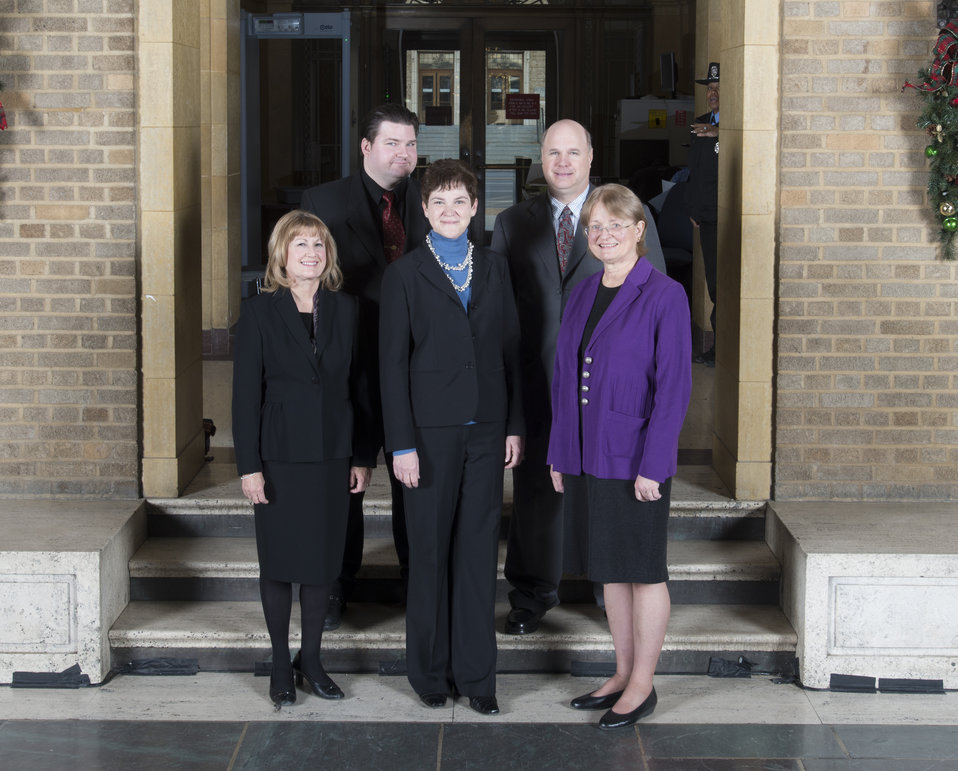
Agriculture Deputy Secretary Krysta Harden stands with the Food Safety Audit Team Office of Inspector General from Oakland, CA on the patio at the U.S. Department of Agriculture (USDA) in Washington, D.C. on Wednesday, Dec. 11, 2013. The team received the Secretary’s Honor Award for outstanding audit work in identifying weaknesses in the Food Safety and Inspection Services’ inspection process, resulting in significant improvement to the Nation's food supply.